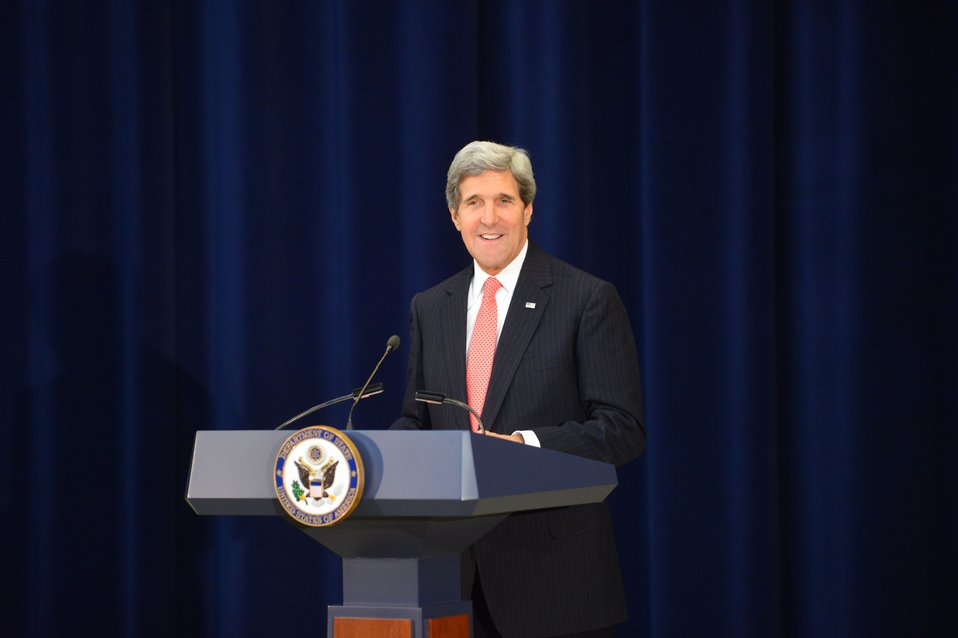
Secretary Kerry Delivers Remarks at the Overseas Security Advisory Council's 28th Annual Briefing

U.S. Secretary of State John Kerry delivers remarks at the Overseas Security Advisory Council’s 28th Annual Briefing at the U.S. Department of State in Washington, D.C., on November 20, 2013.